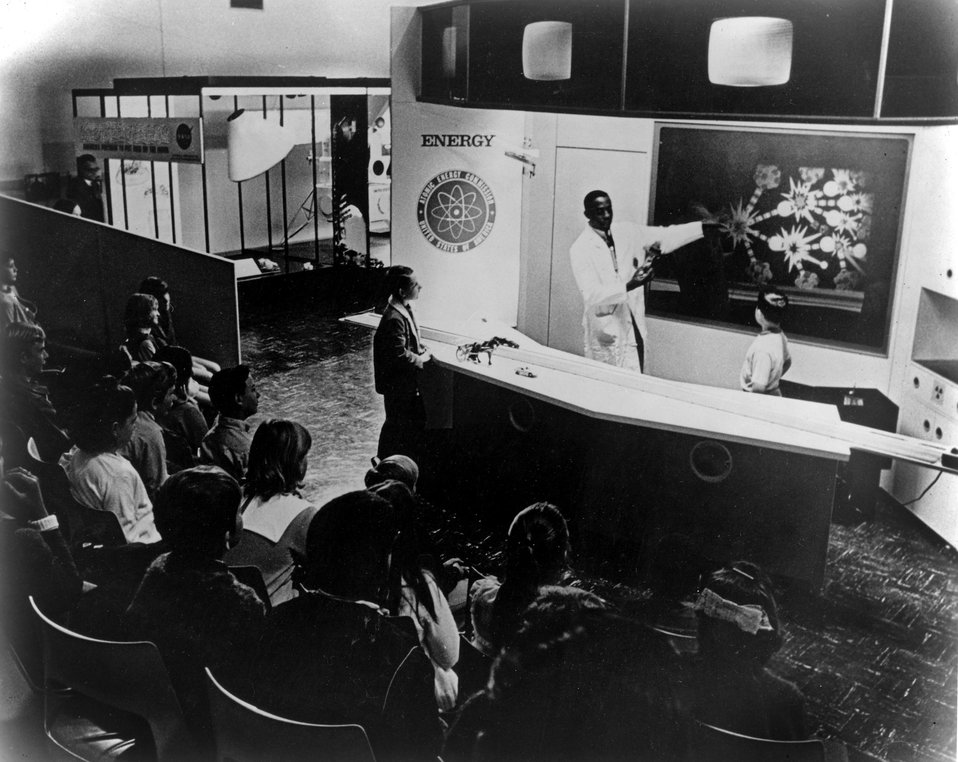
Part of the new AEC exhibit, 'Energy,' which is designed specifically for extended presentations at major U.S. museums, is shown in this photo as it was situated in the San Francisco Palace of Arts and Sciences. c. 1970